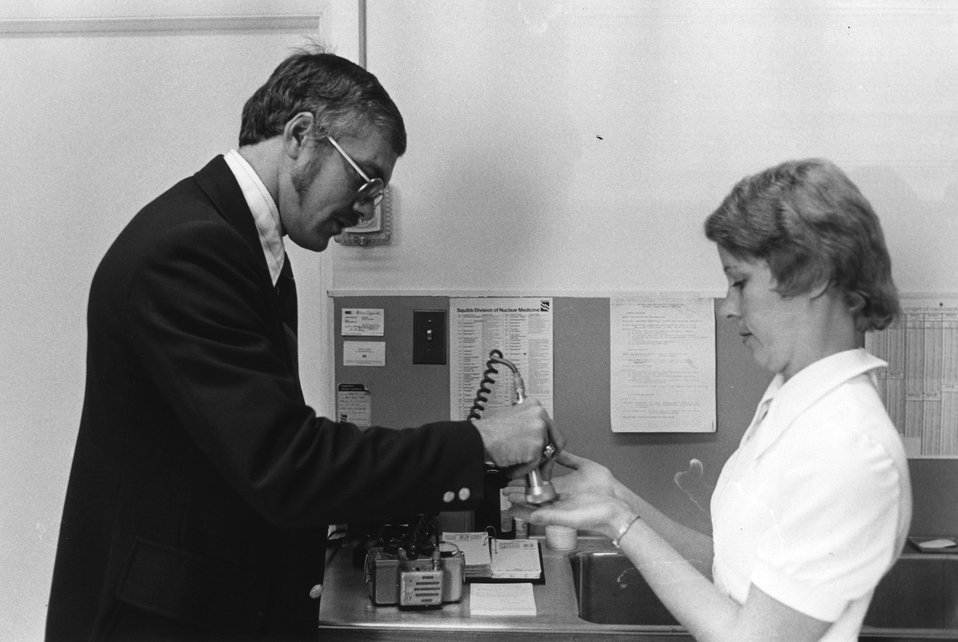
At a Pennsylvania hospital, an AEC inspector checks the hands of the nuclear medicine technician for possible radioactive contamination.